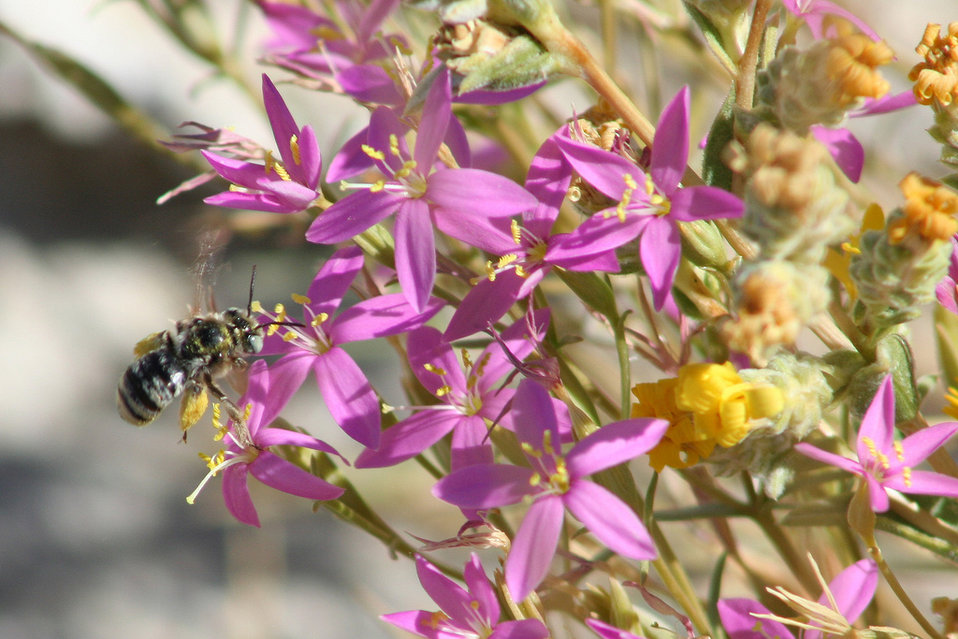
spring-loving centaury

Ash Meadows National Wildlife Refuge, NV